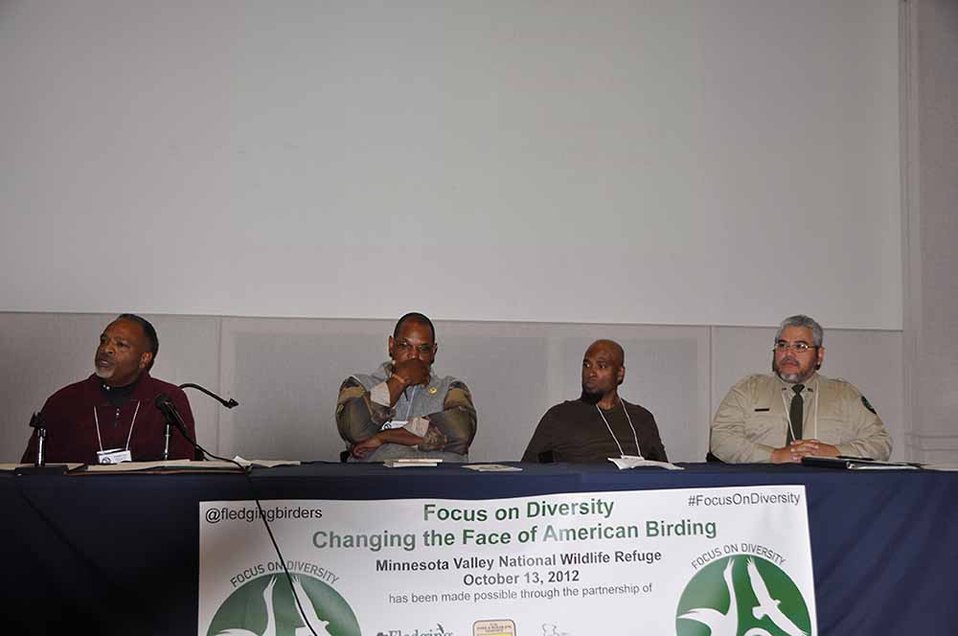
Birding Diversity Panelists

Bloomington, Minn.: Sky Dogs, Bird Chick and Odd Bird land @ Minn. Valley NWR for birding convention. More: www.fledgingbirders.org
Birding Panelists.